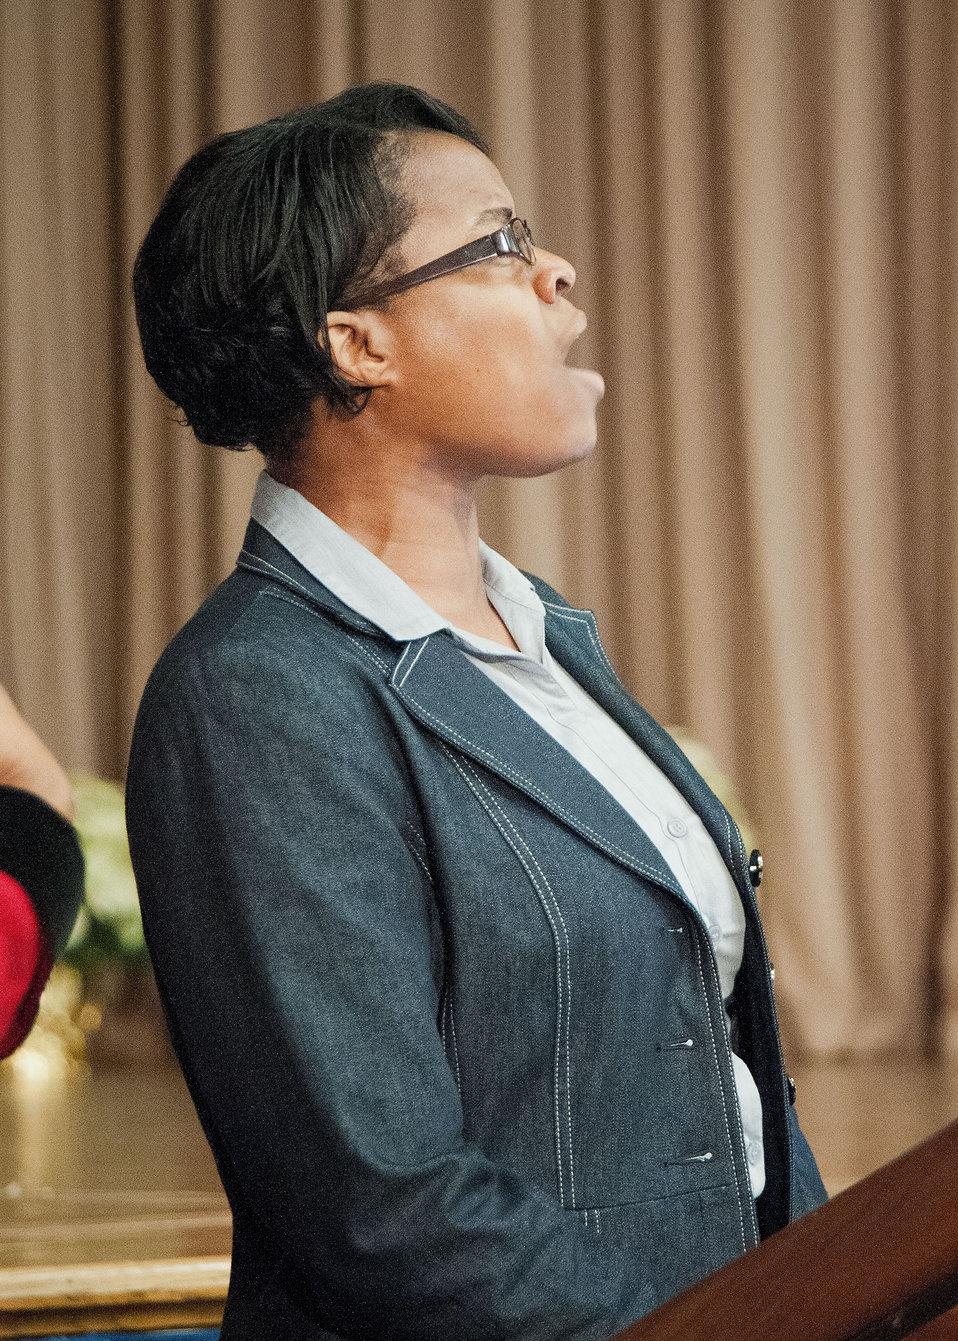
U.S. Department of Agriculture (USDA) Assistant Secretary for Civil Rights Human Resources Specialist Donna Carter sings the National Anthem at USDA’s Fourth Annual Cultural Transformation event held in Washington, D.C. on Tuesday, Dec. 4, 2012.